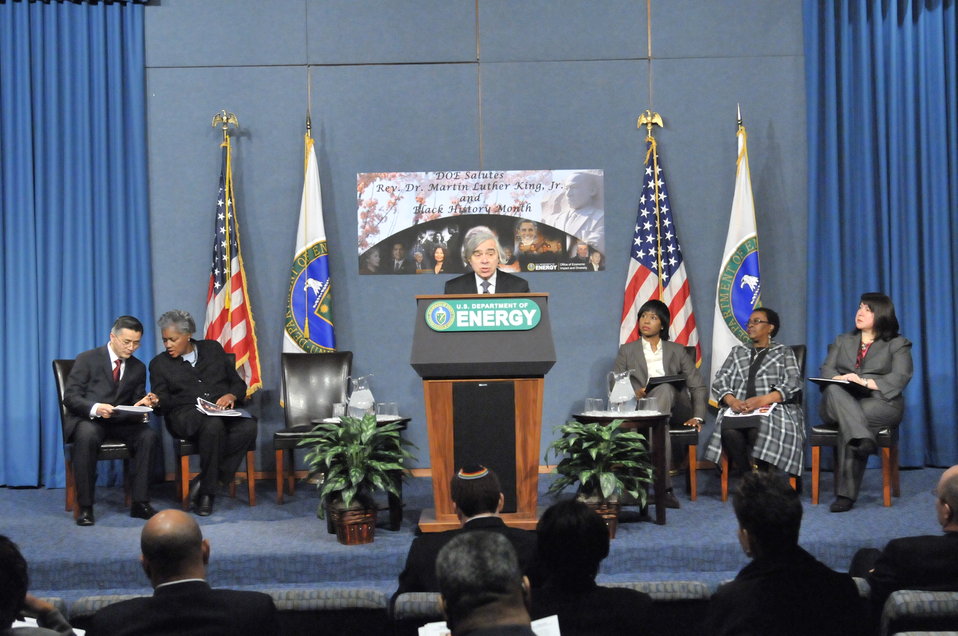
Department of energy -martin luther king / Black history month commemorative program with doe secretary e. Moniz in attendance .